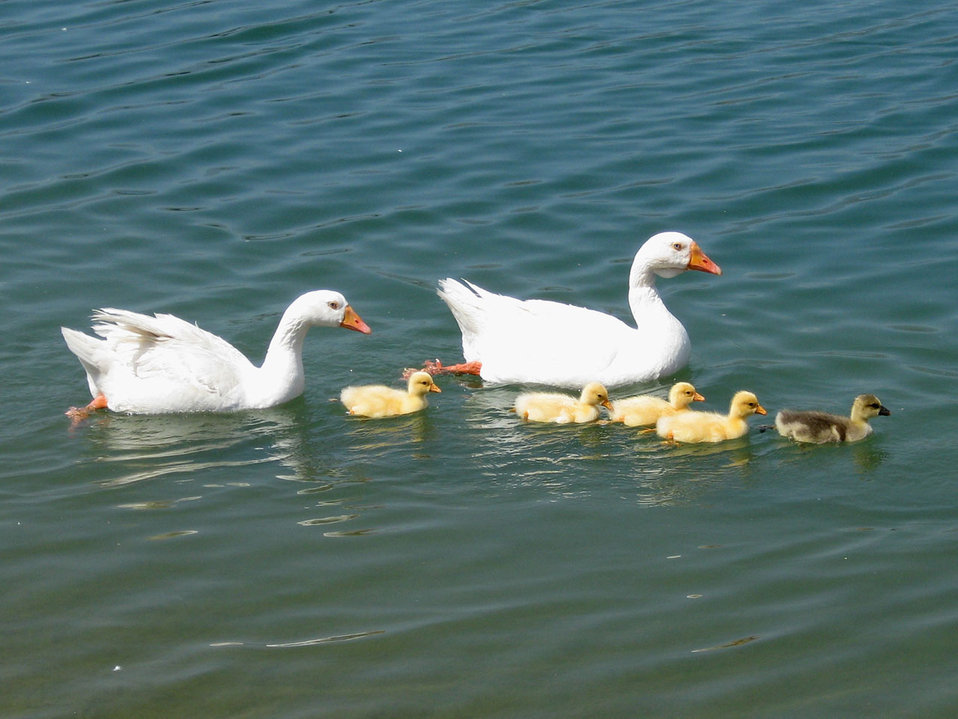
Family of geese out for a swim

Shot at santa fe dam recreation area in irwindale, ca.